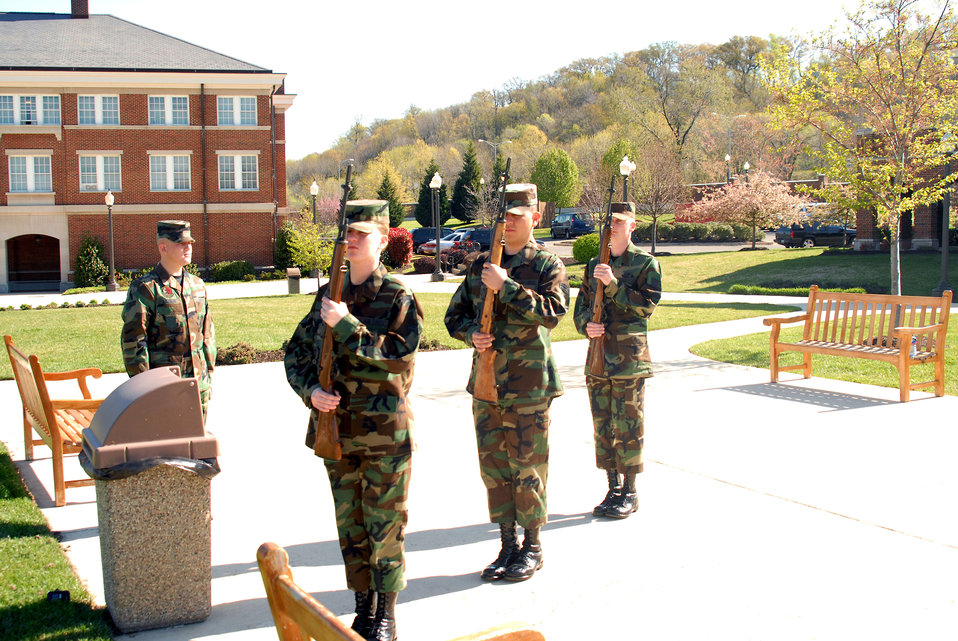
Retiree funerals change to 7-person sequence

Airmen from the United States Air Force Honor Guard at Bolling Air Force Base, D.C., practice the newly implemented 7-person retiree funeral sequence. The new sequence was implemented due to manpower shortages and a larger number of retiree funerals than ever before in Air Force history.